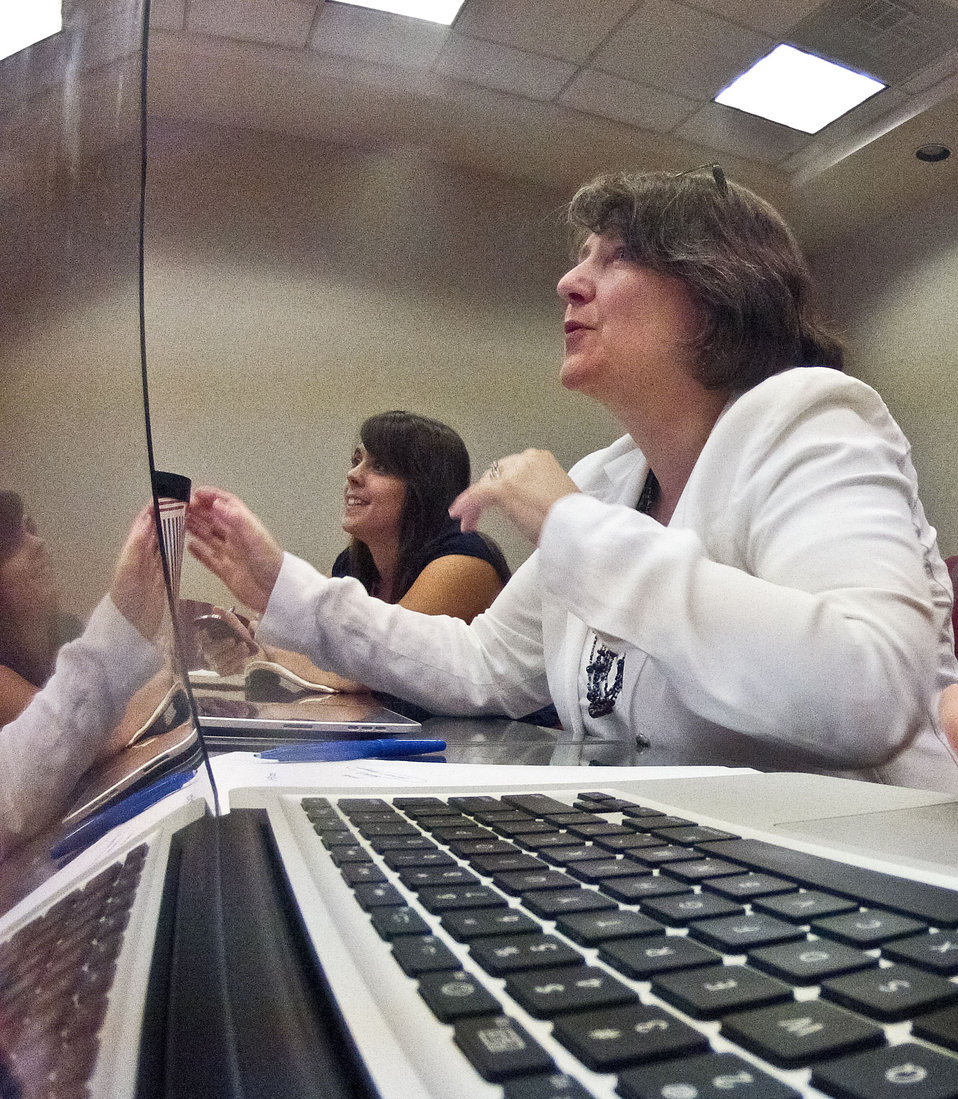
Agriculture Deputy Secretary Kathleen Merrigan enjoys one of the messages she received during a live Twitter chat she is hosting about the Department’s support of local and regional food systems and the recent release of the 2.0 version of the Know Your Farmer, Know Your Food Compass on Tuesday, July 24, 2012, in Washington, D.C. Deputy Secretary Merrigan utilized her staff, such as Strategic Communications Coordinator Alyn Kiel, left, and other subject matter experts to provide useful answers to questions from the public during the #ASKUSDA Virtual Office Hours on Local Food.